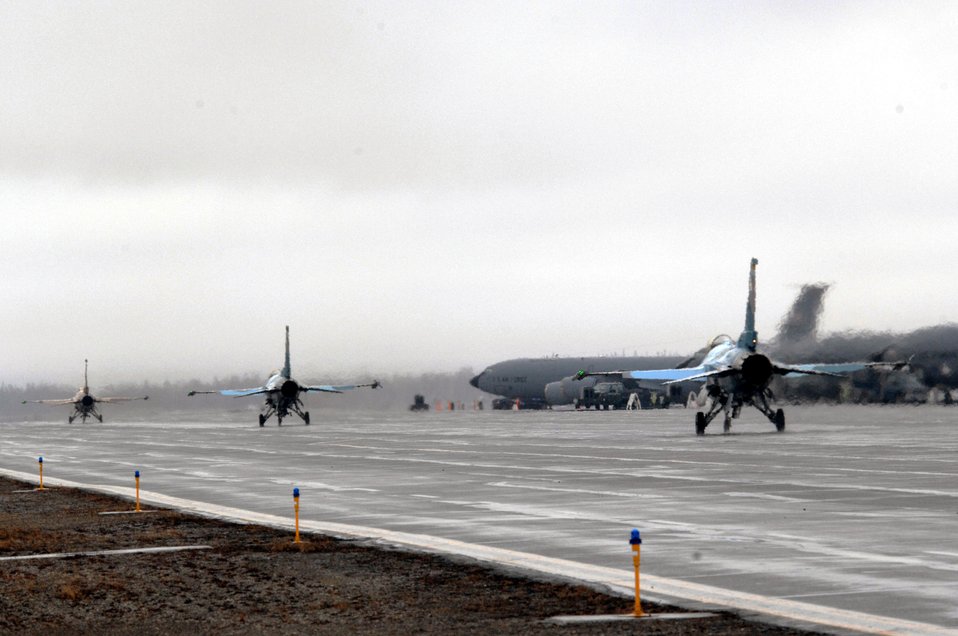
Air combat ready at Red Flag-Alaska

Three F-16 Fighting Falcons from the 64th Aggressor Squadron, Nellis Air Force Base, Nev., taxi for take off April 12 during Red Flag-Alaska 07-1 at Eielson AFB, Alaska. Red Flag-Alaska is a Pacific Air Forces-directed field training exercise for U.S. forces flown under simulated air combat conditions. It is conducted on the Pacific Alaskan Range Complex with air operations flown out of Eielson and Elmendorf Air Force Bases.